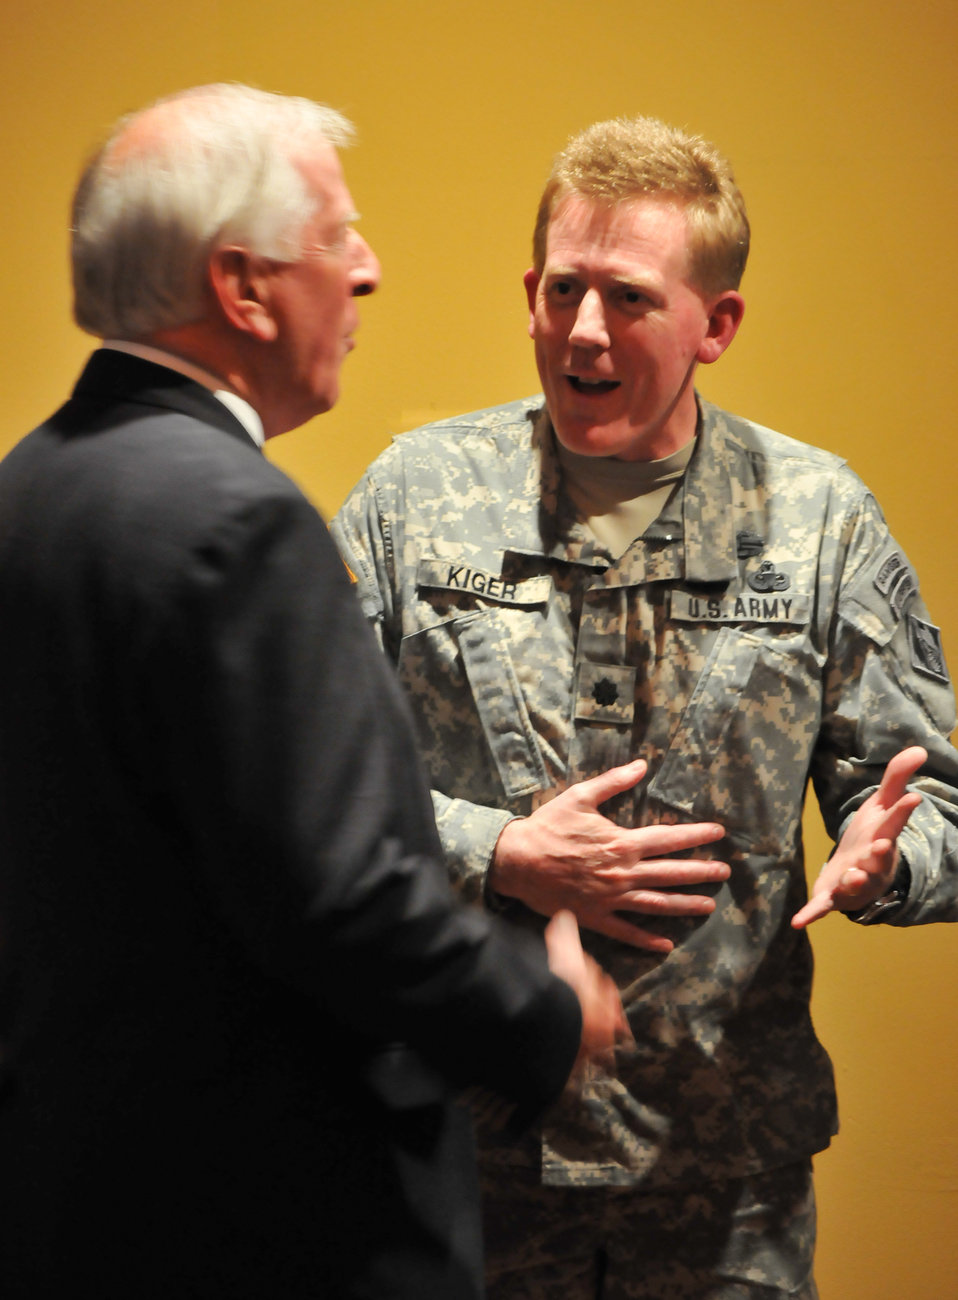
Groundreaking ceremony for the Napa Creek flood risk reduction project

NAPA, Calif. (Oct. 22, 2010) -- U.S. Rep. Mike Thompson (left) and U.S. Army Corps of Engineers deputy district commander Lt. Col. Andrew Kiger share Army stories ahead of a groundreaking ceremony for the Napa Creek flood risk reduction project here Oct. 22. The $14.8 million project, funded by the American Recovery and Reinvestment Act of 2009, is a joint effort of the Corps, the city of Napa, and the Napa Flood Control and Water Conservation District, to reduce flood risk for Napa, Calif.